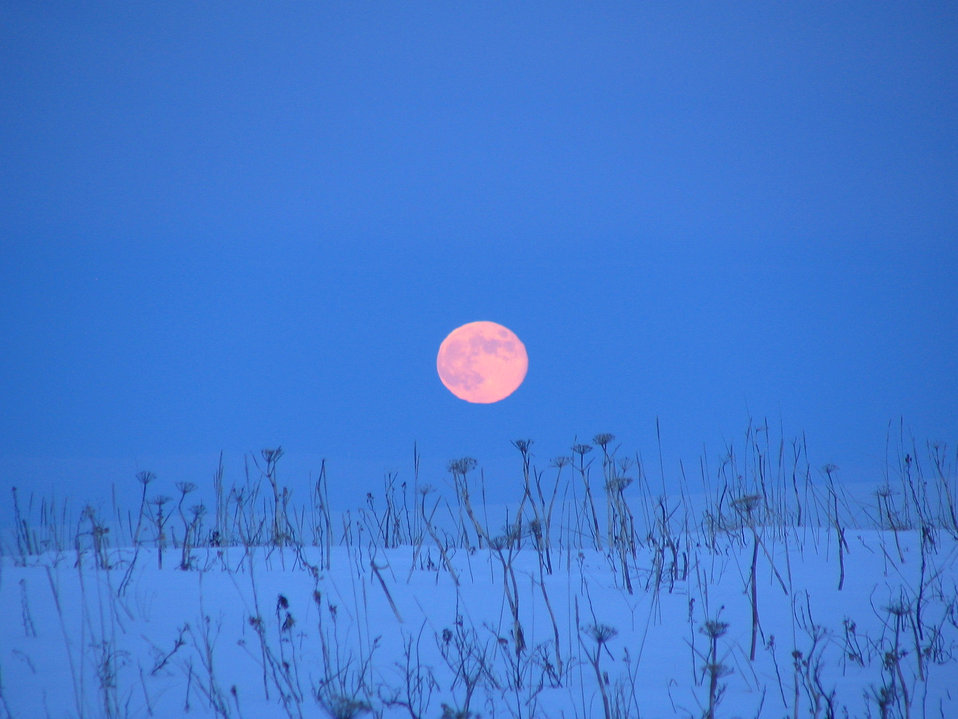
Moonrise at Izembek Refuge

Izembek National Wildlife Refuge, AK.